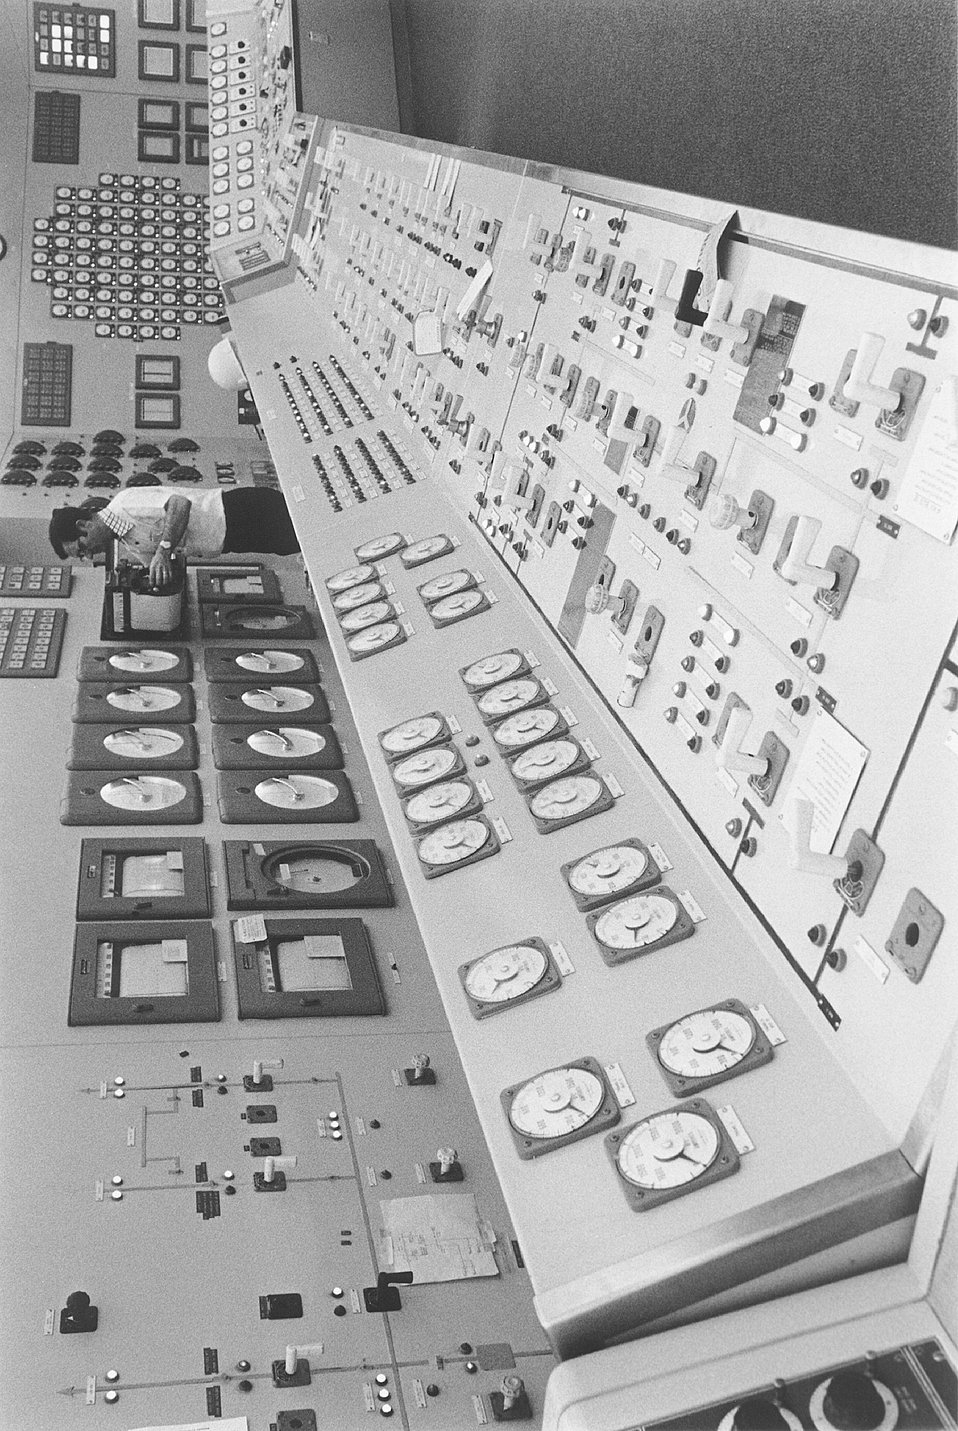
Control room of Commonwealth Edison Company's Dresden Nuclear Power Station near Morris, Illinois.